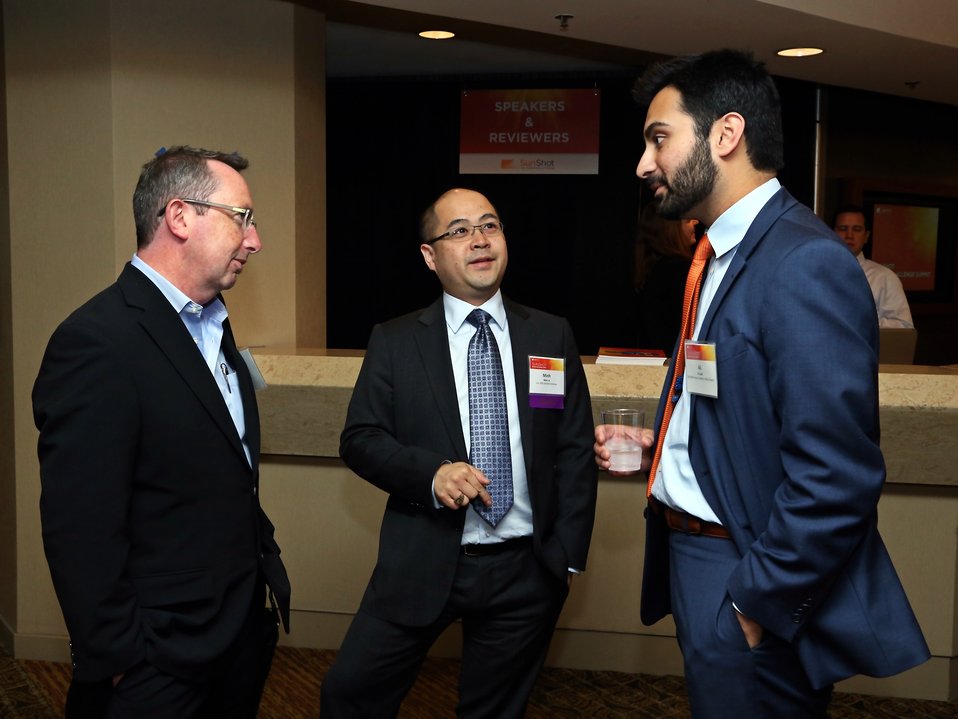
VIP Walkthough 7

SunShot Director Minh Le, and Ali Zaidi, Deputy Director for Energy Policy, The White House Domestic Policy Council.